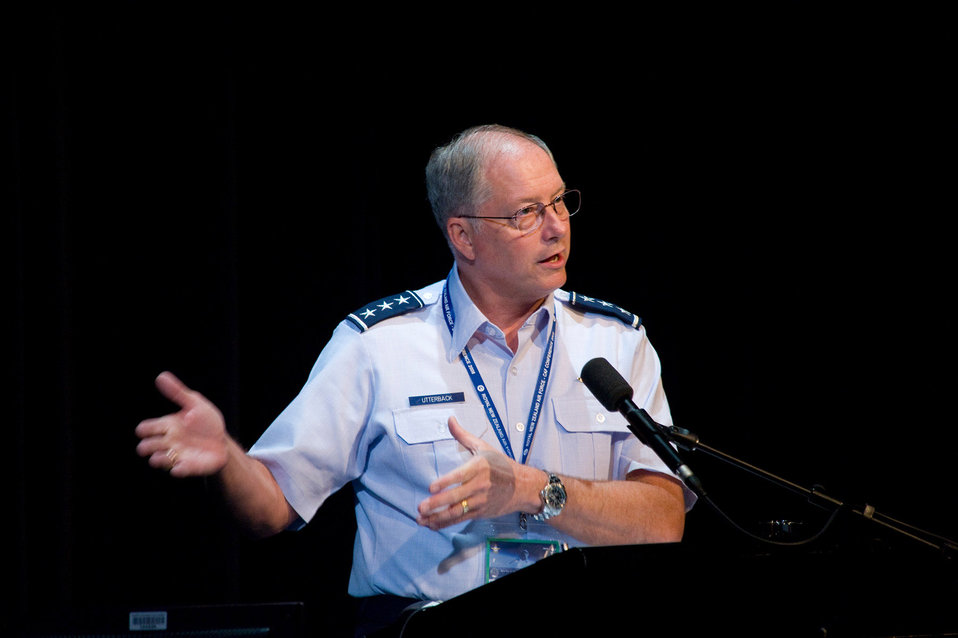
Partnership with New Zealand emphasized at air conference

Lt. Gen. Chip Utterback, 13th Air Force commander, provides the United States Air Force perspective at the 2008 Royal New Zealand Air Force Chief of Air Force Conference held at Te Papa, Wellington, New Zealand. The conference topics focued on security in the Pacific and airpower's future contribution.